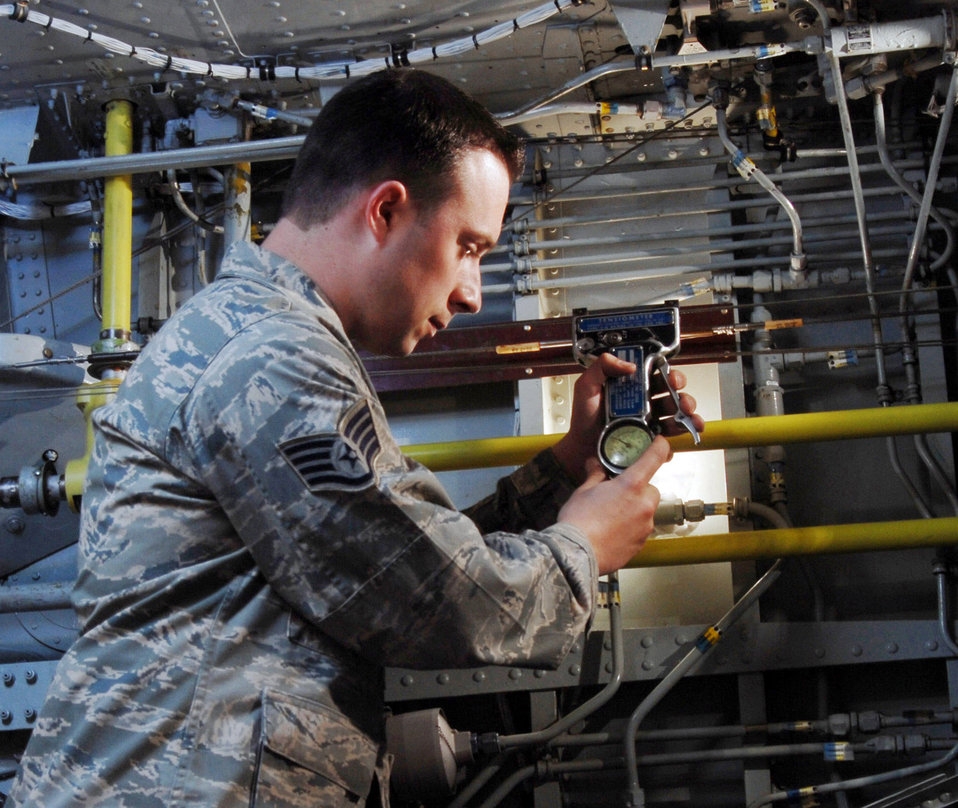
Landing gear, check!

Staff Sgt. Greg Thompson uses a cable tension meter to check an aileron cable inside the main landing gear wheel well on an KC-135 Stratotanker at March Air Reserve Base, Calif. He is an aircraft mechanic assigned to the 452nd Maintenance Squadron's Aero Repair Section.